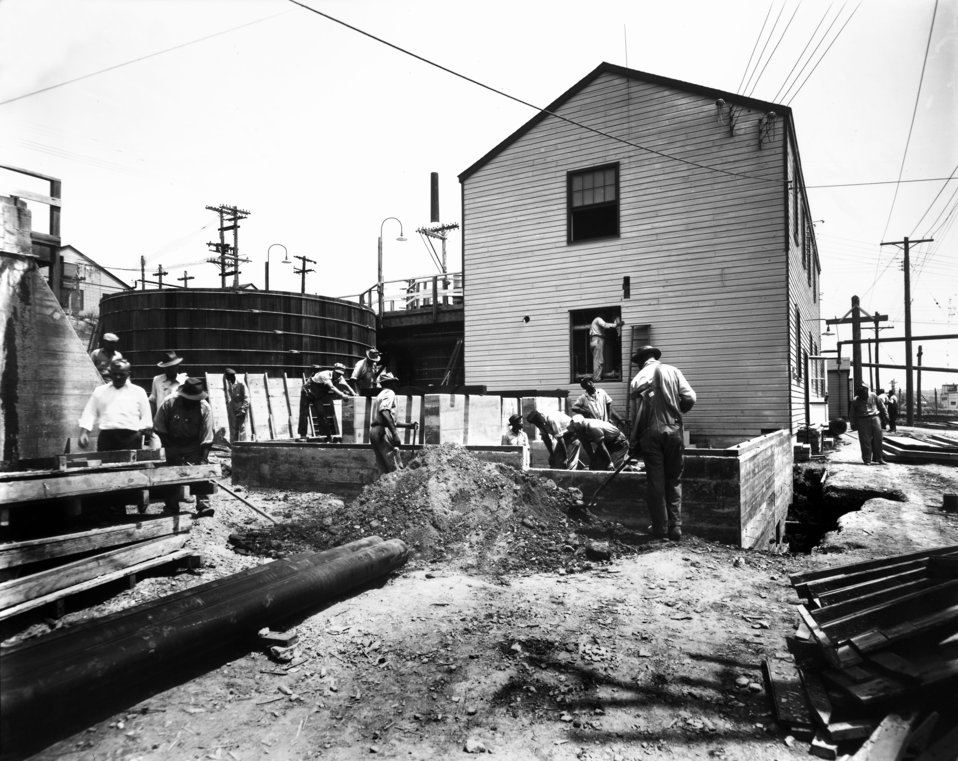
Early Constrution ORNL 1943 Oak Ridge

X-10-16 DOE photo Ed Westcott 1943 Oak Ridge Tennessee